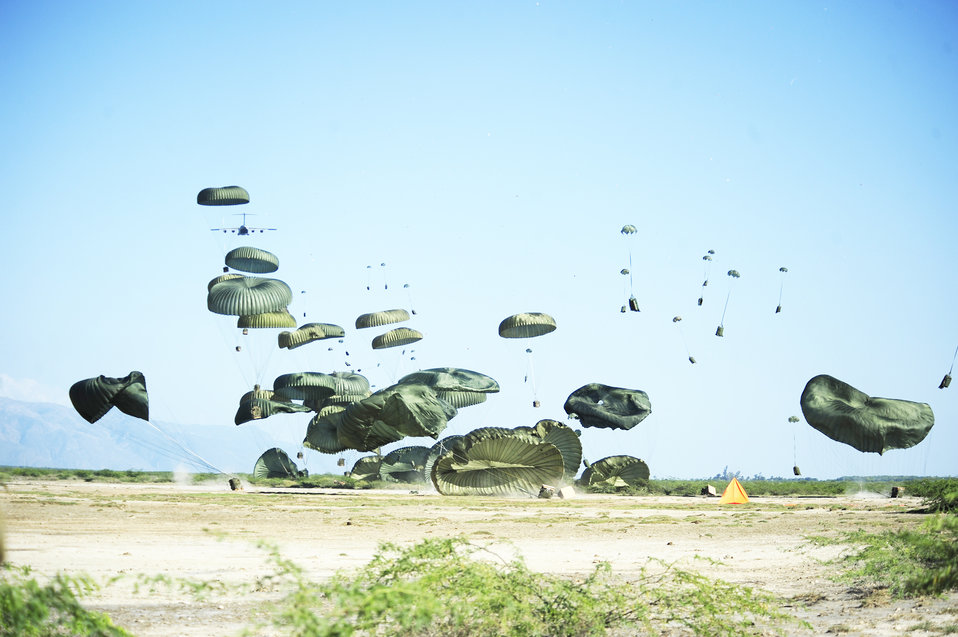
Haiti Earthquake Relief

A U.S. Air Force C-17 Globemaster III airdrops humanitarian aid into the outskirts of Port-au-Prince, Haiti, Jan 18, 2010. Department of Defense assets have been deployed to assist in the Haiti relief effort following a magnitude 7 earthquake that hit the city on Jan. 12, 2010.